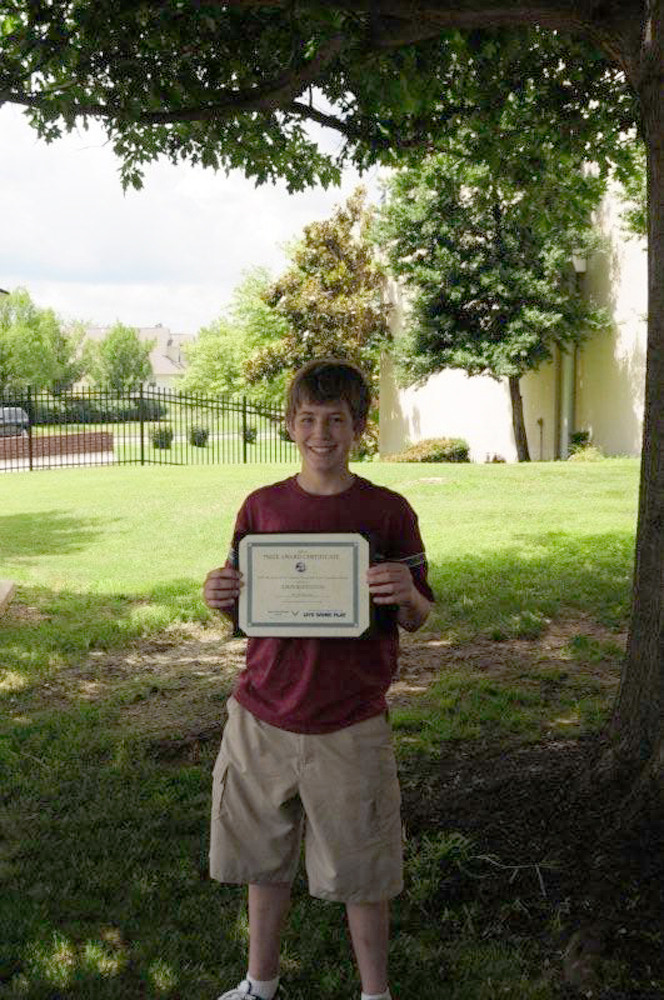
Winner named for My Air Force Life photo competition

Ethan Whitecotton is the winner of the My Air Force Life youth photo competition with his entry titled, 'Reflections.' He received a photo prize package valued at $2,000, including a Nikon D90, SB 900 flash, tripod, memory card and battery charger.